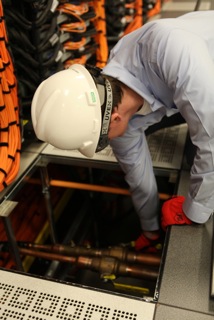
At Argonne National Laboratory, employee examines the pipes under MIRA will help keep the supercomputer's temperatures stable. An engineering marvel, the 10-petaflops machine is a capable of carrying out 10 quadrillion calculations per second. The Argonne Leadership Computing Facility is committed to delivering 786 million core scientists each year.